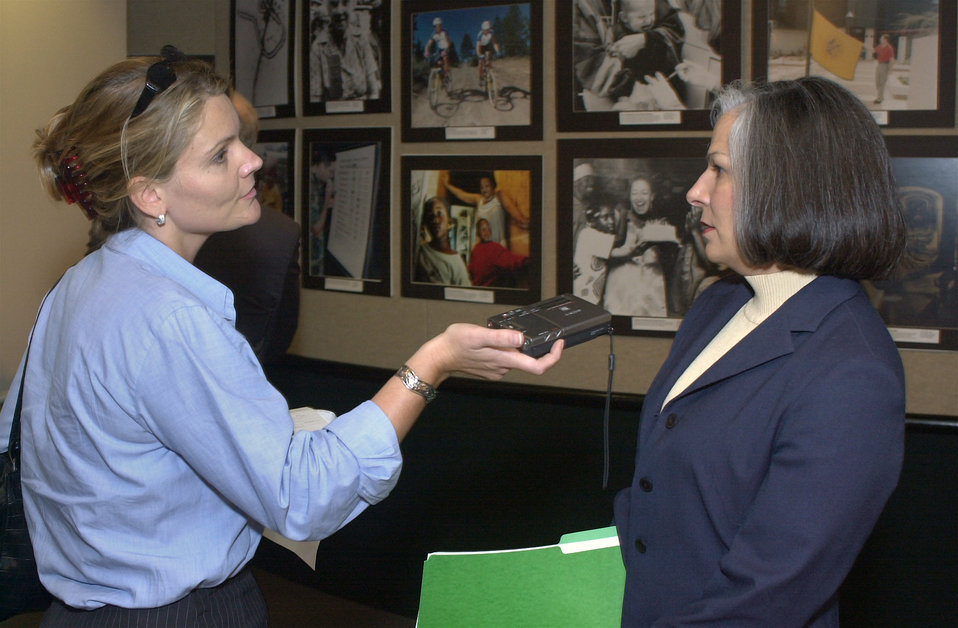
Centers for Disease Control and Prevention Bioterrorism Preparedness Press Briefing, August 27, 2002.